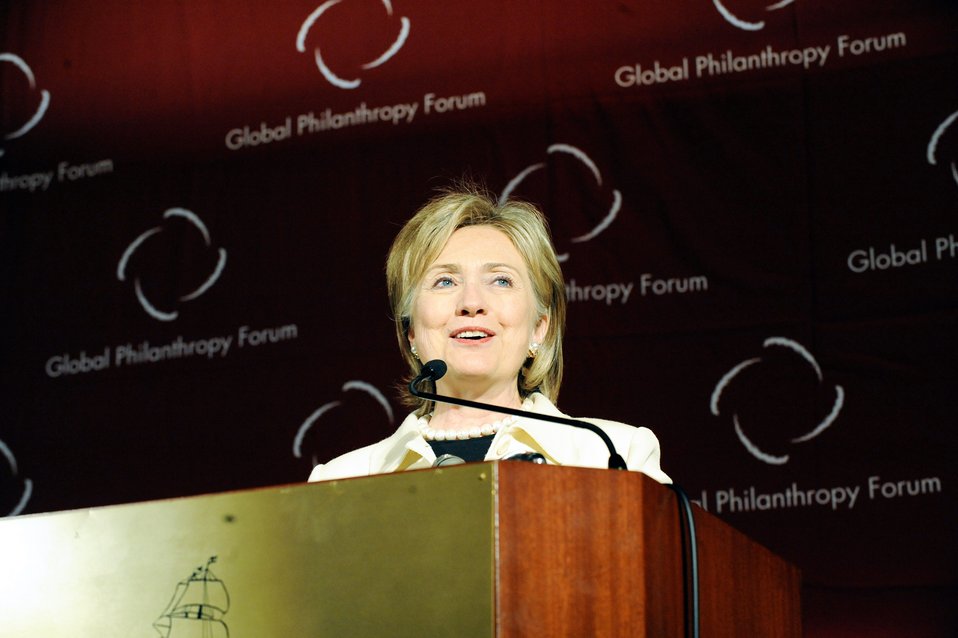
Global Philanthropy Forum Conference

U.S. Secretary of State Hillary Rodham Clinton provides remarks at the Global Philanthropy Forum Conference in Washinton, DC April 22, 2009.